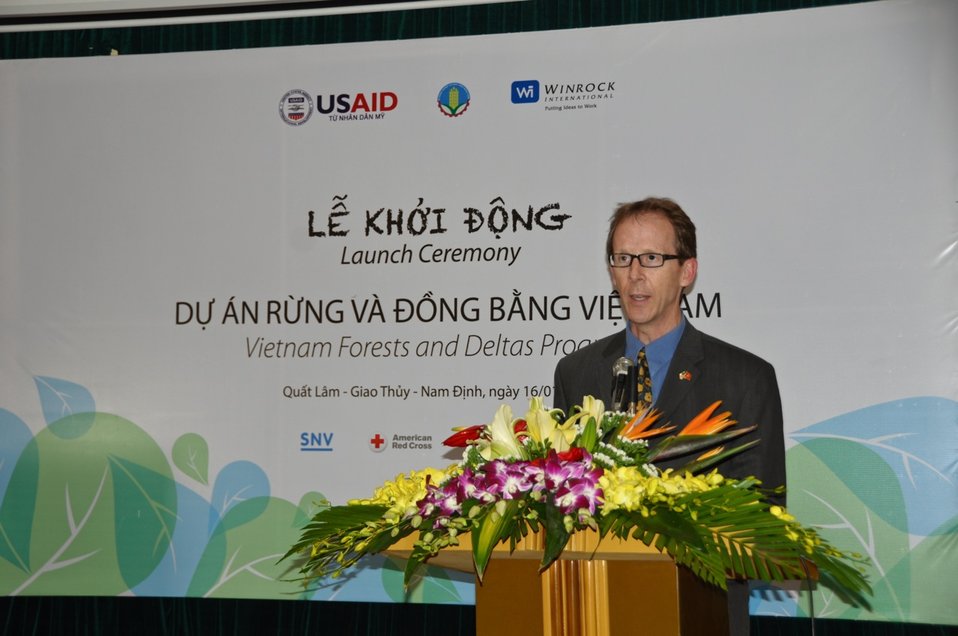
USAID Mission Director Joakim Parker delivers opening remarks at the launching event.

Quat Lam, Nam Dinh. January 16, 2014.